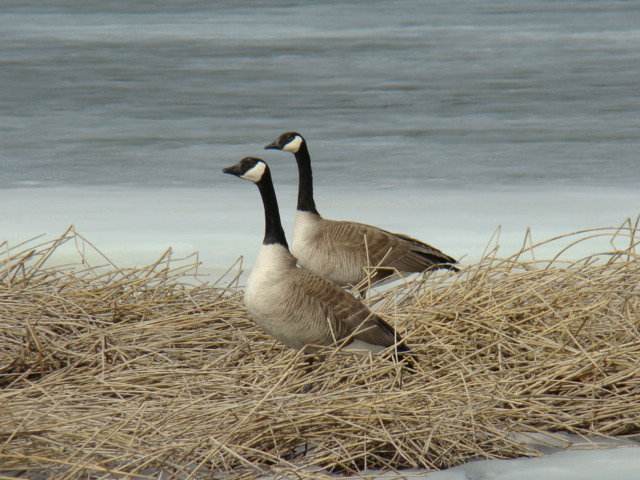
Canada Geese

The lands of the refuge were established to protect and provide habitat for migratory birds that cross State lines and international borders and are by law a Federal trust responsibility.
The refuge is of great value to waterfowl and shorebirds, as well as other migrating water-dependent bird species, because of the diversity of wetland and upland habitats that provide for the diverse life cycle needs of these species.